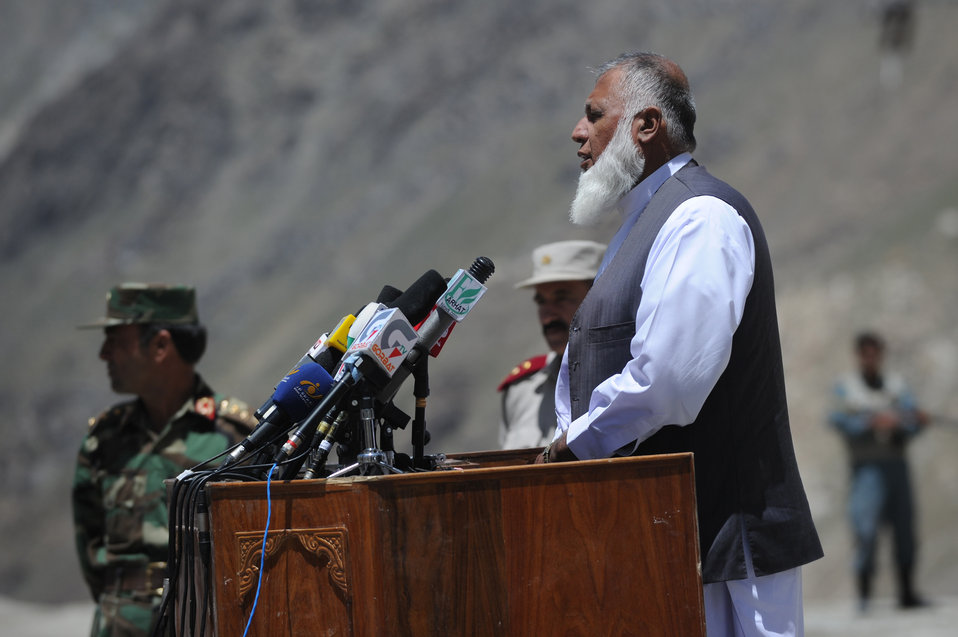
Baghlan Governor Mohammad Akbar Barakzai makes remarks during a ceremony to mark the beginning of renovations at the Salang Tunnel on the border of Parwan and Baghlan Provinces, Afghanistan, on Wednesday, June 15, 2011. (S.K.Vemmer/Department of State)